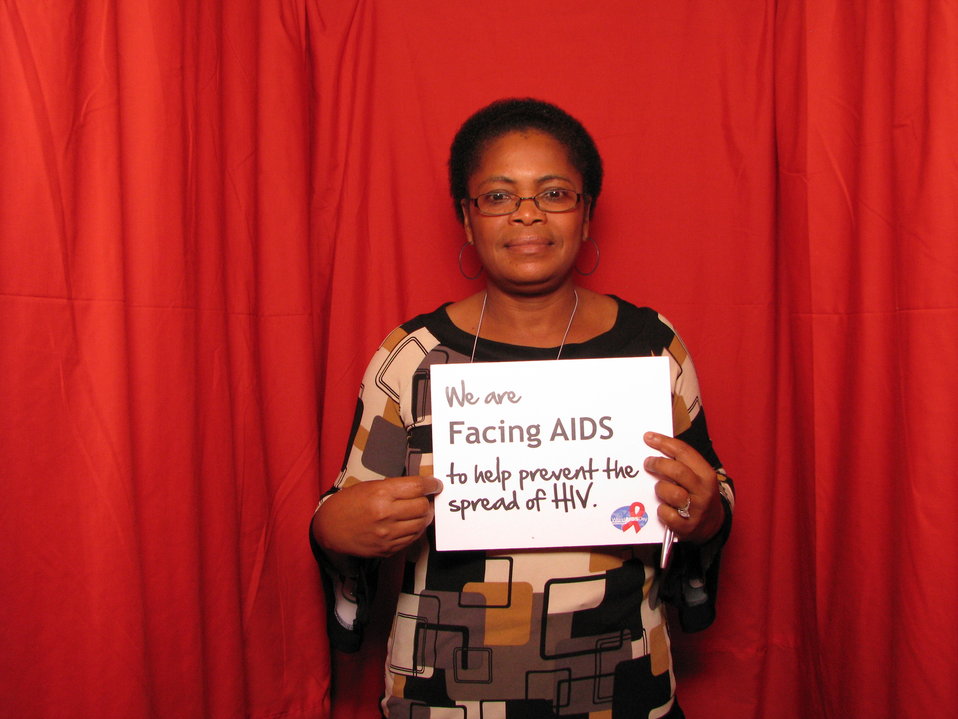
We are FACING AIDS to help prevent the spread of HIV.

From the AIDS.gov photo booth at the U.S. Conference on AIDS, September 2010 (Orlando, FL).